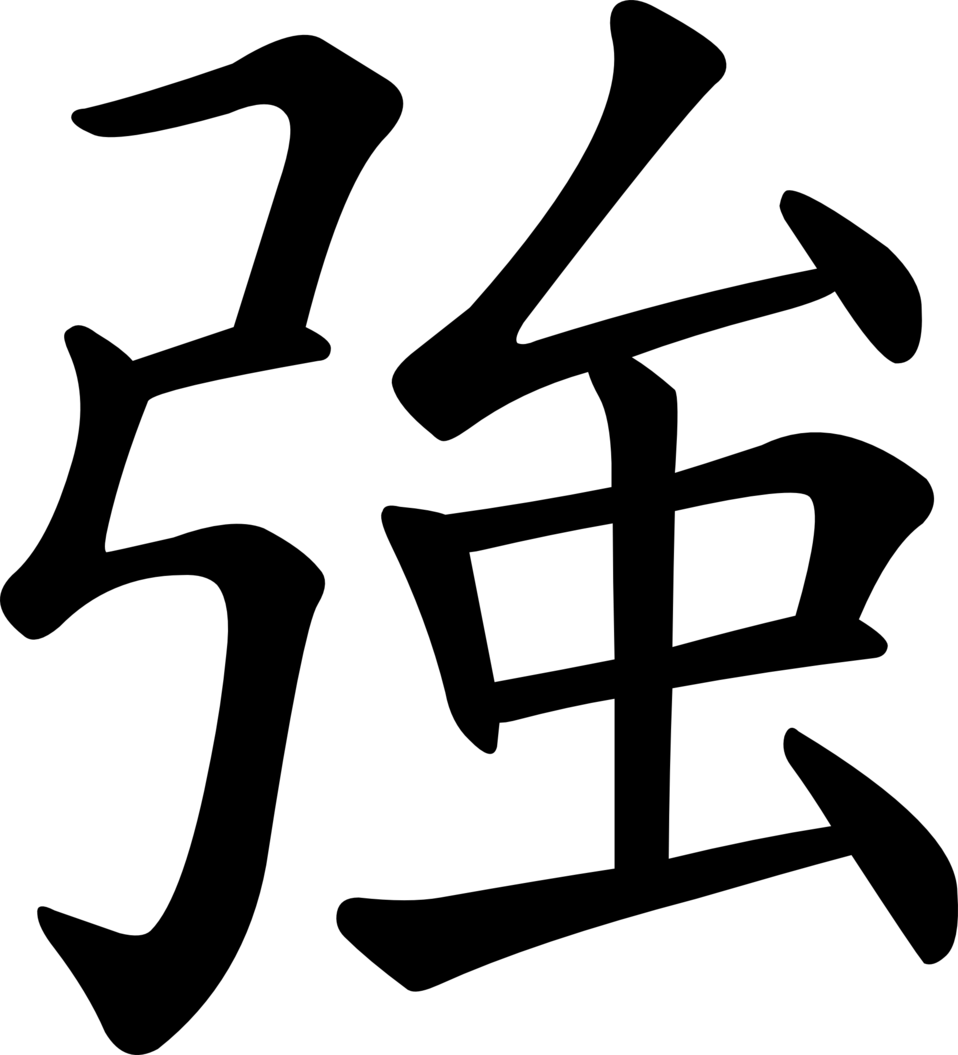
SVG rendering of Chinese character 強 (qiáng). Created using en:Inkscape and the AR PL ZenKai Uni font.